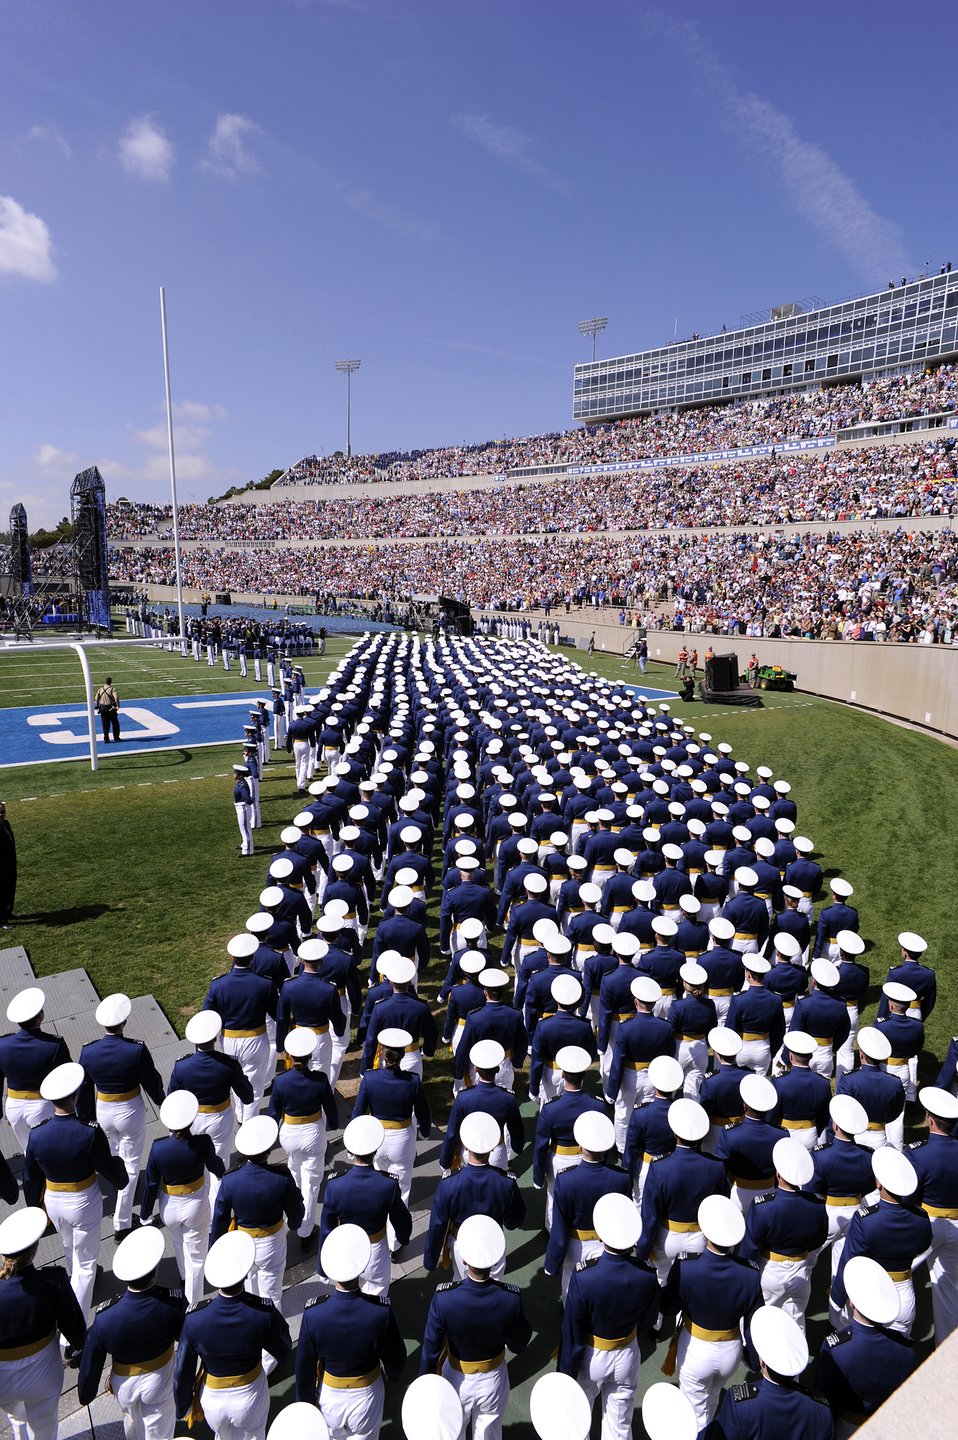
Joint Chiefs chairman delivers Academy commencement

The 1001 members of the graduating class of 2010 march into Falcon Stadium to start graduation ceremonies May 26, 2010, at the U.S. Air Force Academy, Colo.